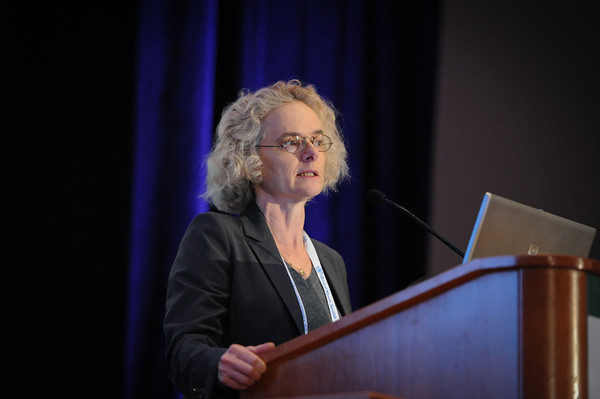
Dr. Volkow Speaks at XIX International AIDS Conference - 3